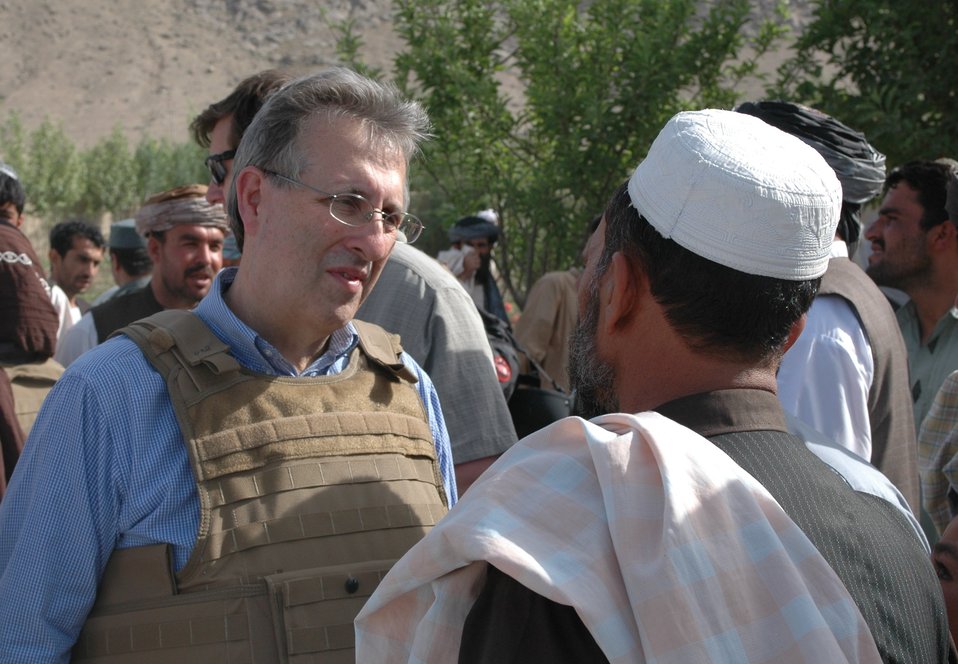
Dr Shah Visits Argandab April 10, 2010